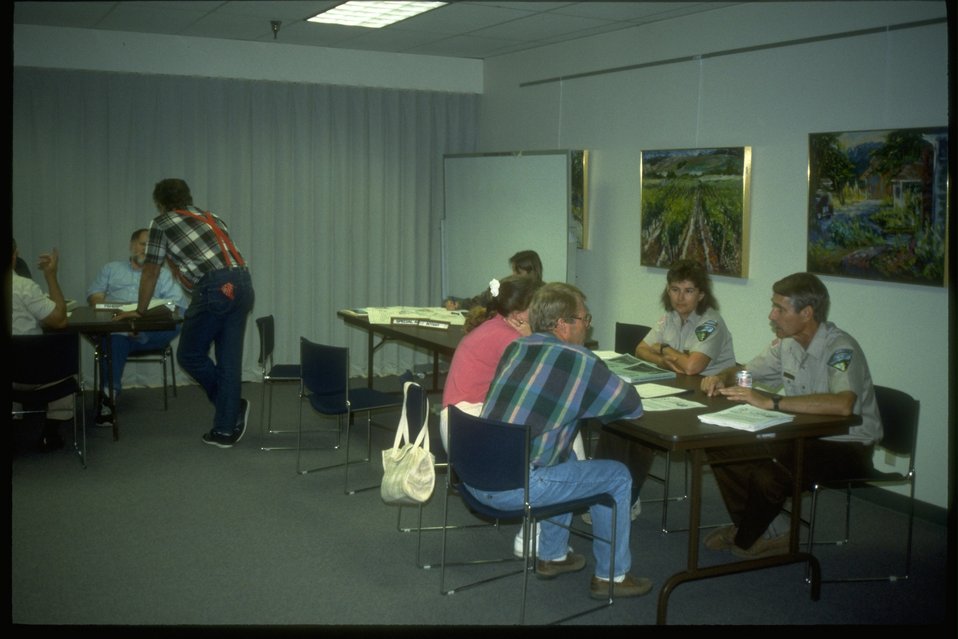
Public Meeting.